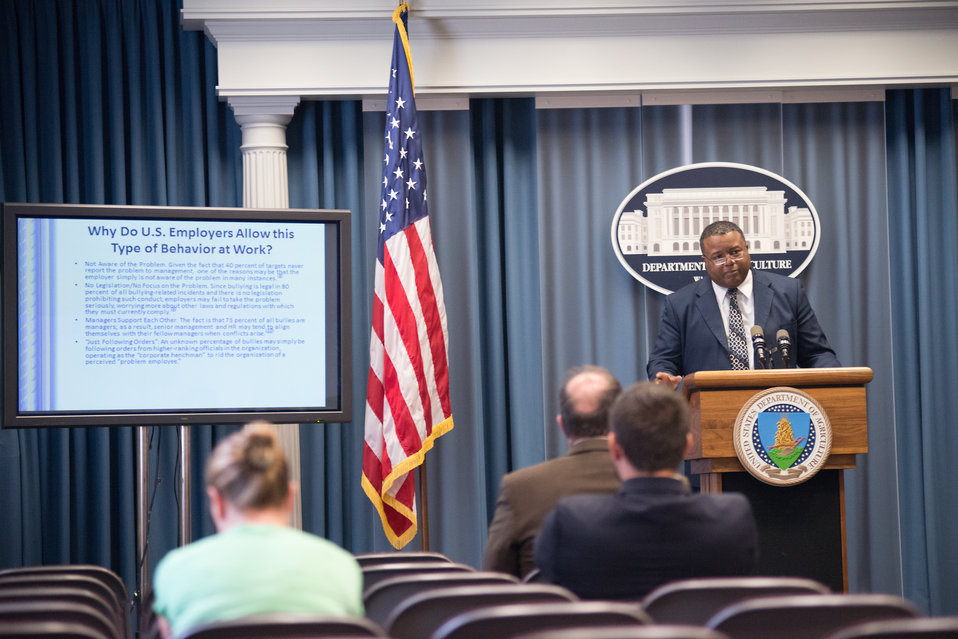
Bureau of Engraving and Printing Alternative Dispute Resolution Steering Committee member and mediator Leonardo Rowe leads the forum on Workplace Bullying during the U.S. Department of Agriculture (USDA) Rural Development’s (RD) 2nd Annual Cultural Transformation kickoff opening ceremony and forums, themed “Employees Influencing Change,” on Tuesday, Aug. 13, 2013 at USDA in Washington, D.C.